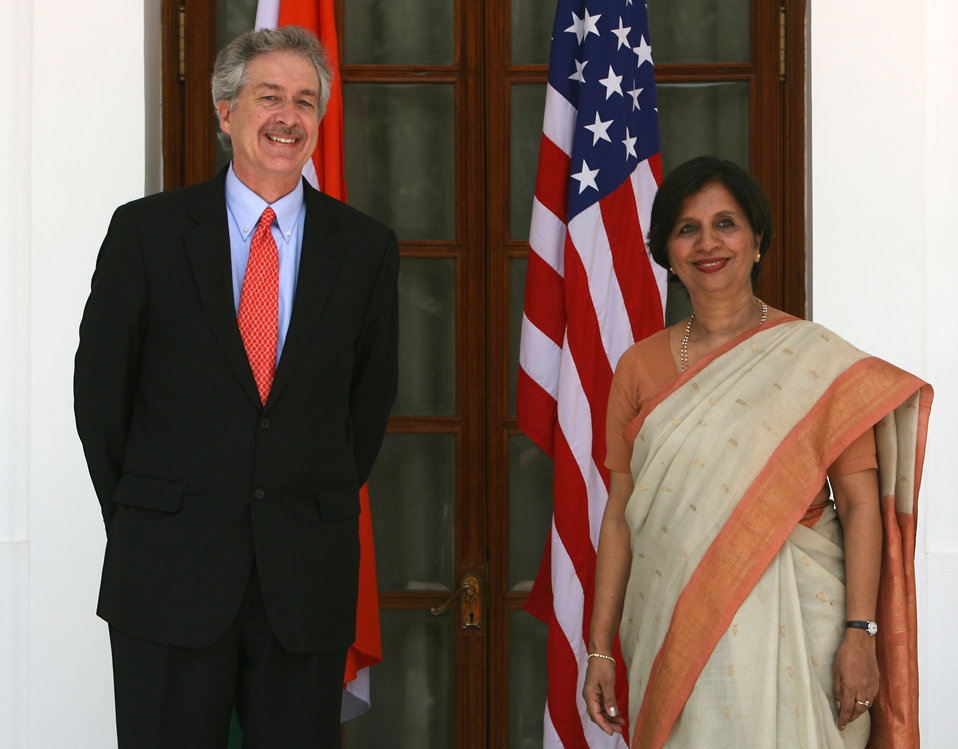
Under Secretary Burns Meets With Indian Foreign Secretary Rao

Under Secretary for Political Affairs William J. Burns meets with Indian Foreign Secretary Nirupama Rao at the Hyderabad House in New Delhi, India, on May 24, 2010.